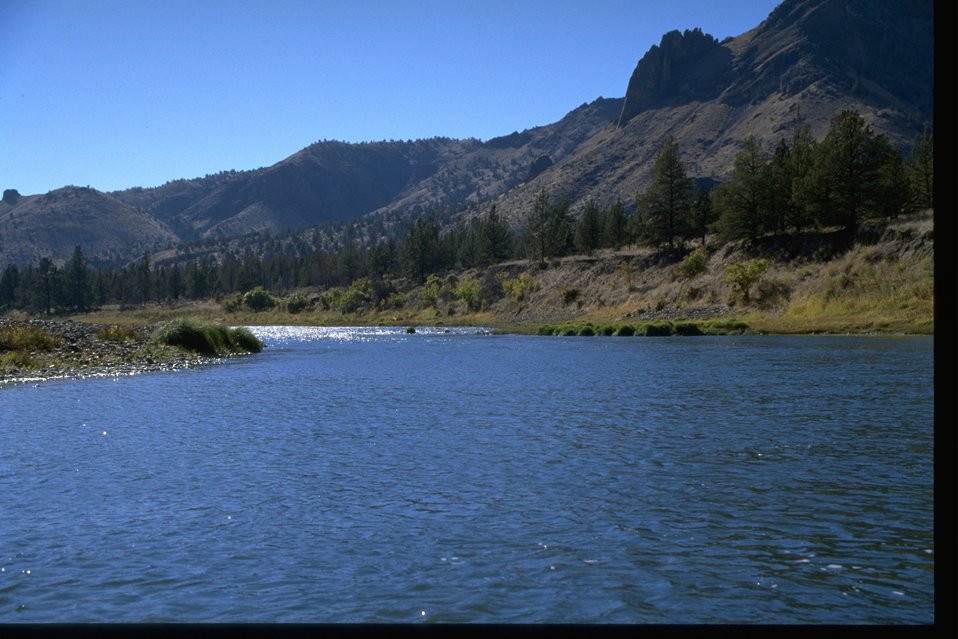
Up river from Sleeping Indian. Hills and Juniper surrounding the John Day River.